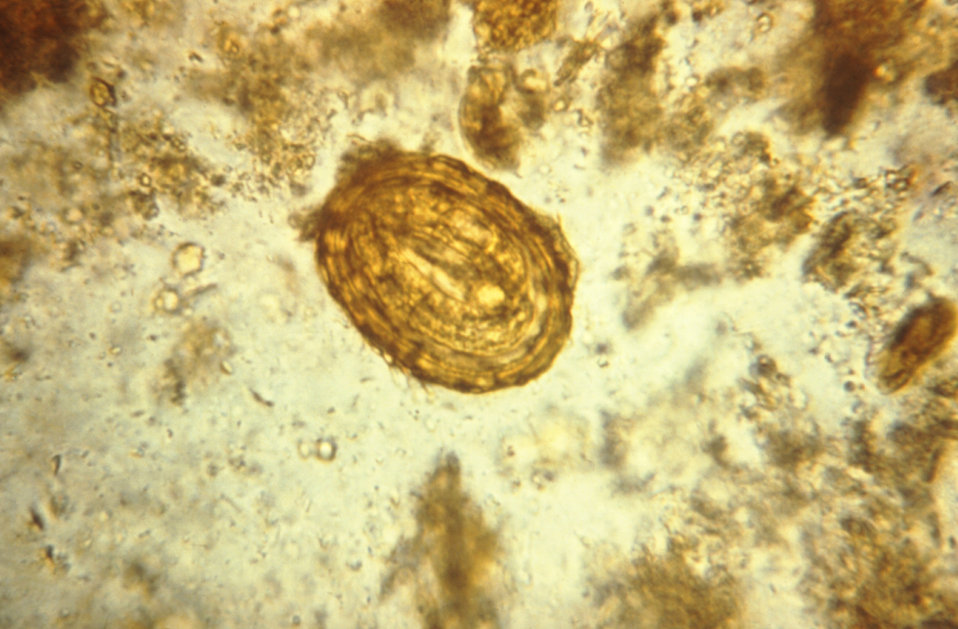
This photomicrograph depicts a fertilized egg of the parasite Ascaris lumbricoides.